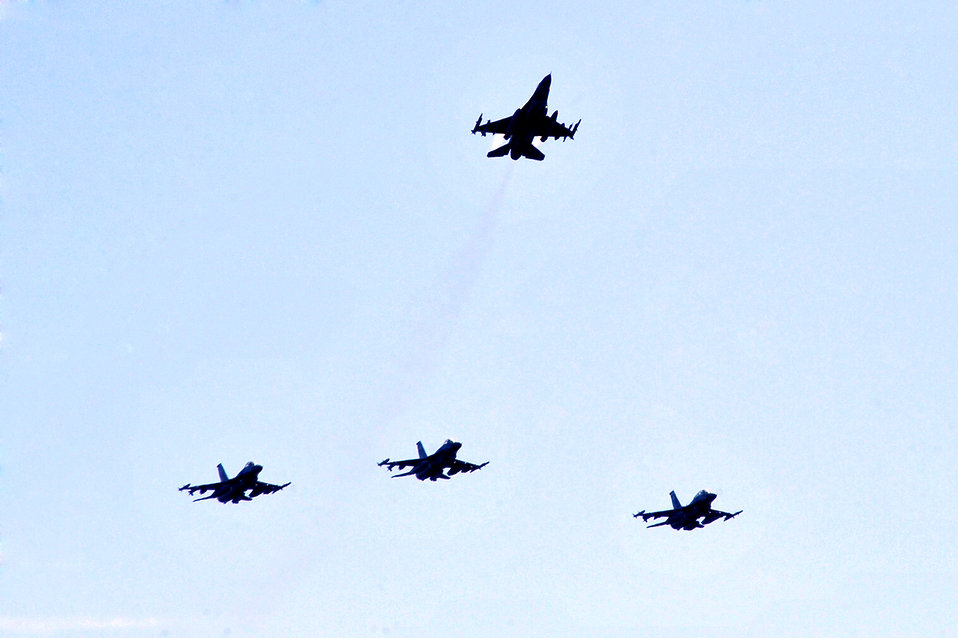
Airmen honor the fallen

F-16 Fighting Falcon pilots perform a missing-man flyover during a memorial service Oct. 22, 2009, at Shaw Air Force Base, S.C. The pilots serve with the 77th Fighter Squadron.